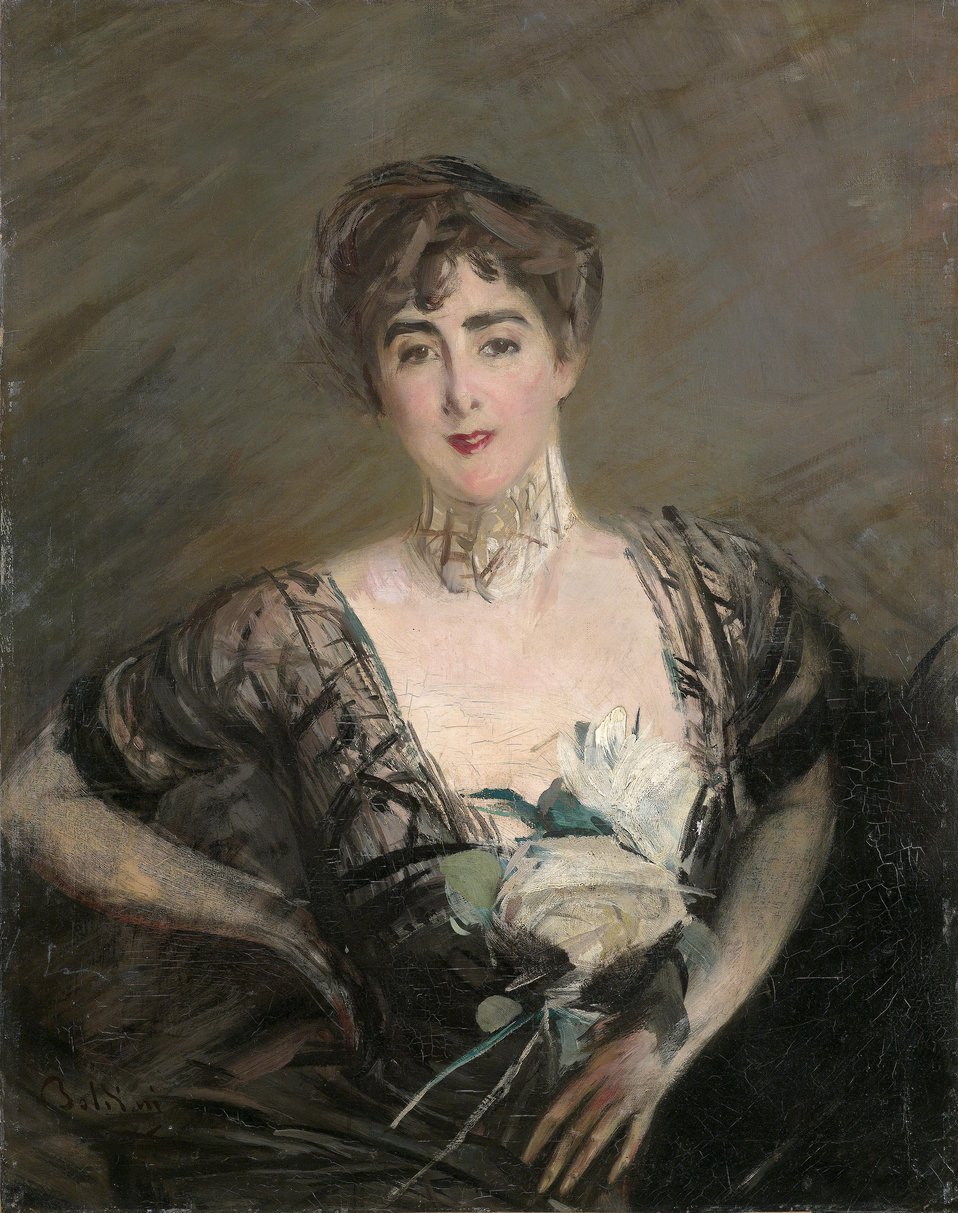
Portrait der Josefina Alvear de Errazuriz, signiert Boldini, Öl auf Leinwand, 80 x 60 cm